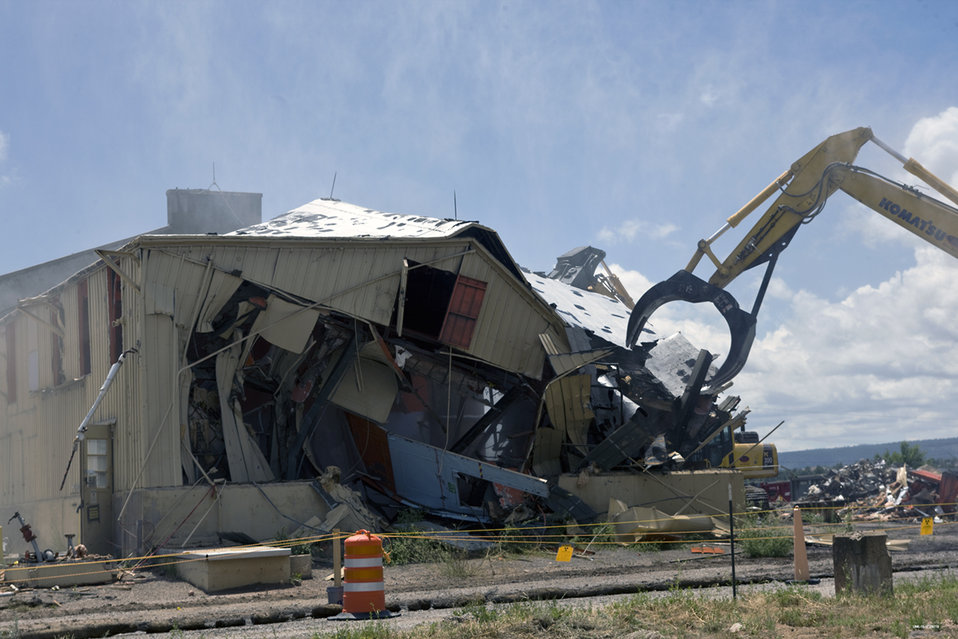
Efficient Recovery Act Work Leads to $6 Million in Savings

Workers begin demolishing LANL Building 21-2 at TA-21 at LANL in late July 2011.

Efficient contracting and waste management has led to a $6 million cost savings for a $73 million American Recovery and Reinvestment Project at Los Alamos National Laboratory (LANL).

The savings has allowed for two additional large buildings to be added to the demolition schedule at LANL’s Technical Area 21 (TA-21). The $73 million in Recovery Act funds was already providing for the demolition of 22 buildings.